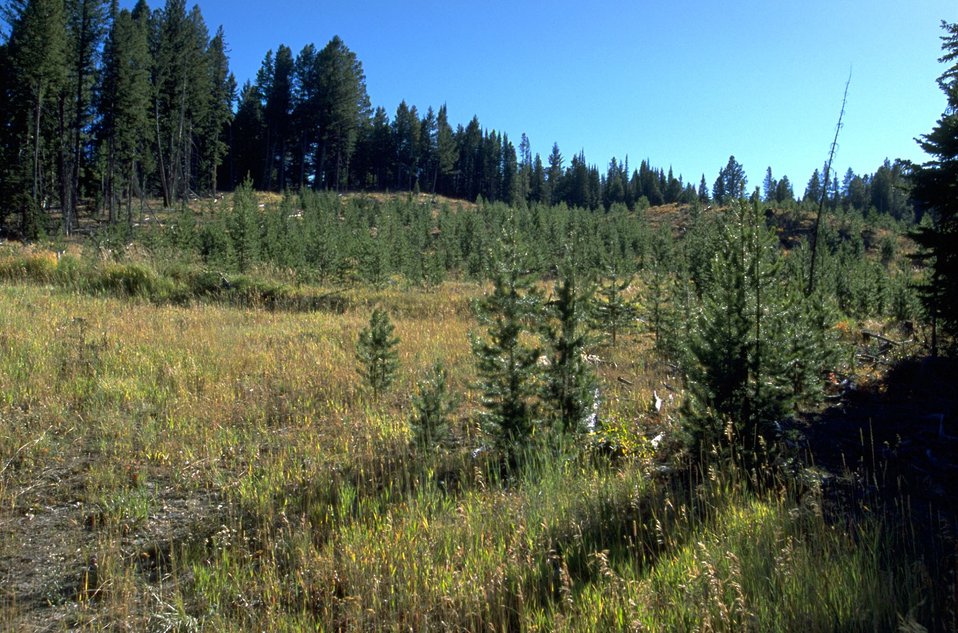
Young Lode Pole trees in timber sale area